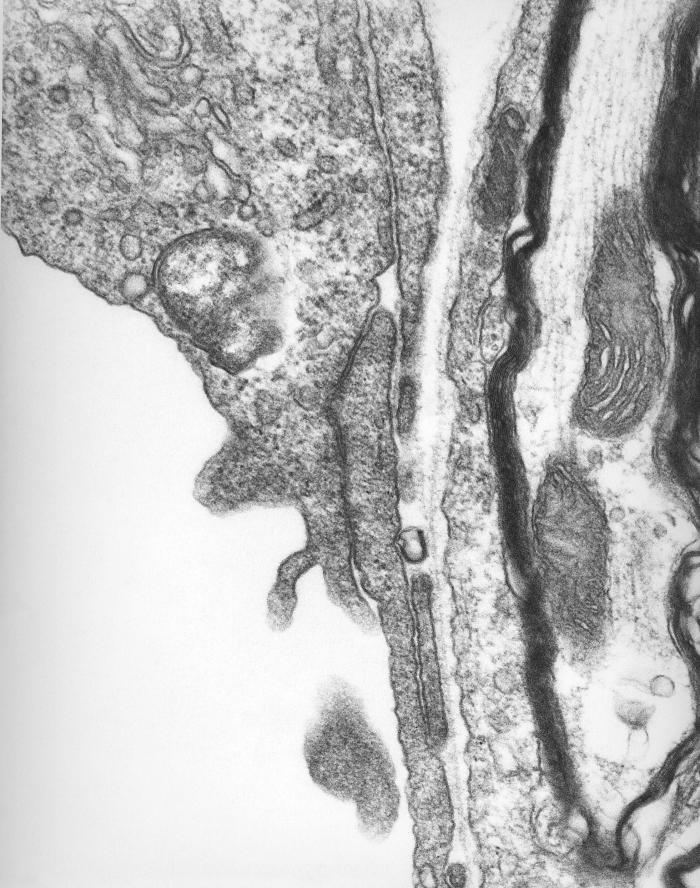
This 1978 transmission electron micrograph (TEM) depicted a brain capillary of mouse that had been experimentally infected intravenously with Orientia tsutsugamushi rickettsial micro-organisms. In this particular field of view, a hypertrophic capillary endothelial cell contained one visible organism free within its cytoplasm. The adjacent endothelial cell was of normal thickness.